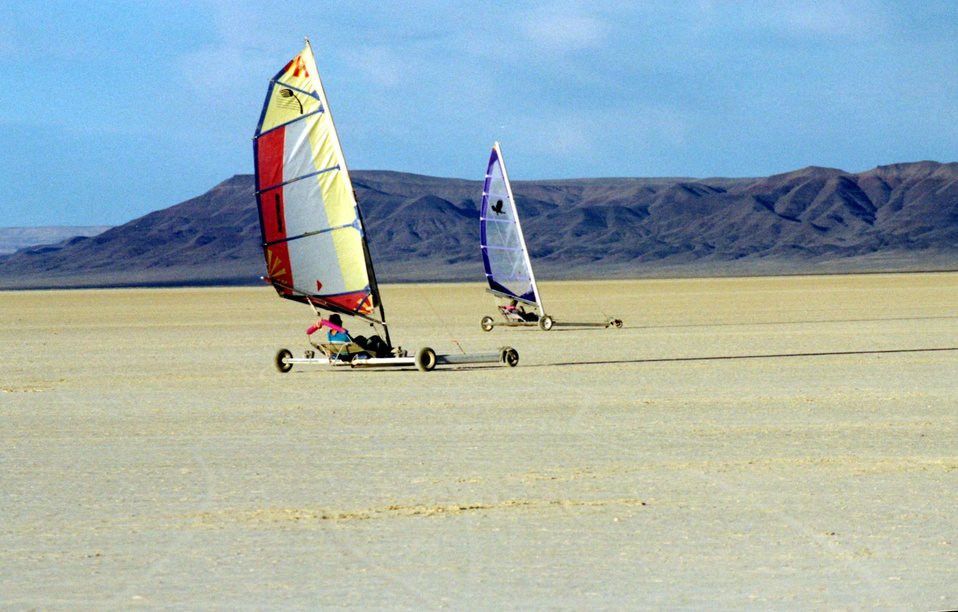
Sand Saling on the Alvord Desert in eastern Oregon.